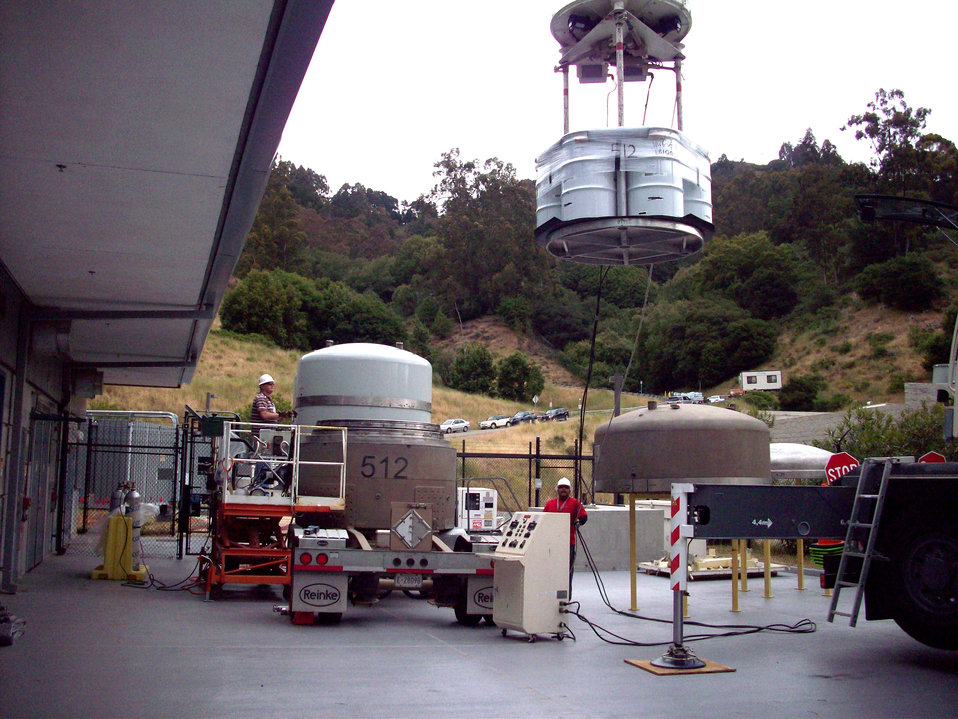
DOE Completes Cleanup of Transuranic Waste at Berkeley Lab

Contact-handled transuranic waste is loaded into a shipping container.

DOE recently completed cleanup of legacy transuranic waste at the Lawrence Berkeley National Laboratory (LBNL).
A byproduct of the nation’s nuclear defense program, transuranic waste is safely and permanently disposed in rooms mined out of an ancient salt formation more than 2,100 feet below the surface at DOE’s Waste Isolation Pilot Plant (WIPP) in New Mexico.